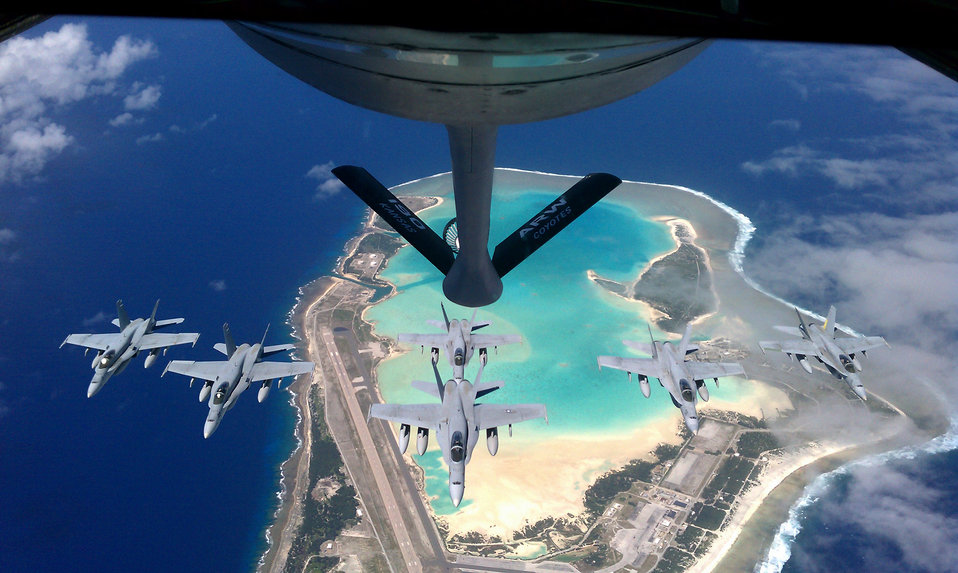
Feeding some hungry Hornets

A KC-135 Stratotanker from the Kansas Air National Guard's 190th Air Refueling Wing prepares to refuel Navy F/A-18 Hornets over Wake Island during an escort mission from Japan to the United States.